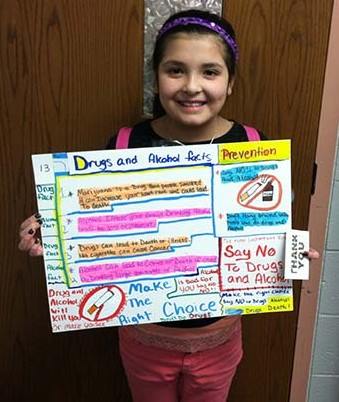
Making a Statement during NDFW 2014

Sky Rising Sun won Poster with the Clearest Message for Drug Facts Week during the LDF Minobimaadiziiwin Coalition National Drug Facts Week Poster Contest Event. They work collaboratively to prevent and reduce substance abuse, especially among youth, by promoting healthy lifestyles in Lac du Flambeau, Wisconsin.